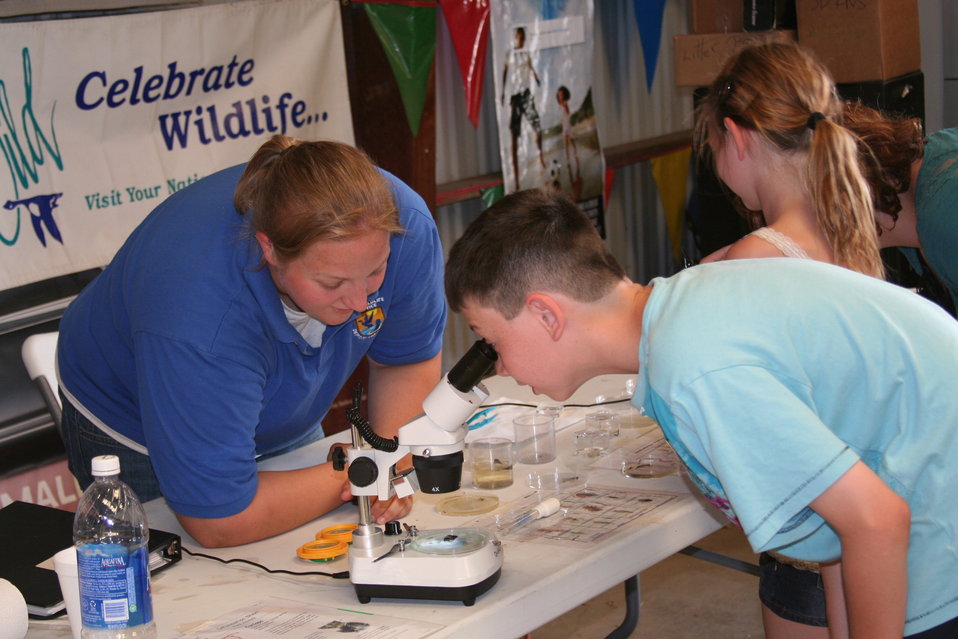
2012 Outdoor Expo

SCA Intern Hannah Roos helping a child view wetland bugs under a microscope.